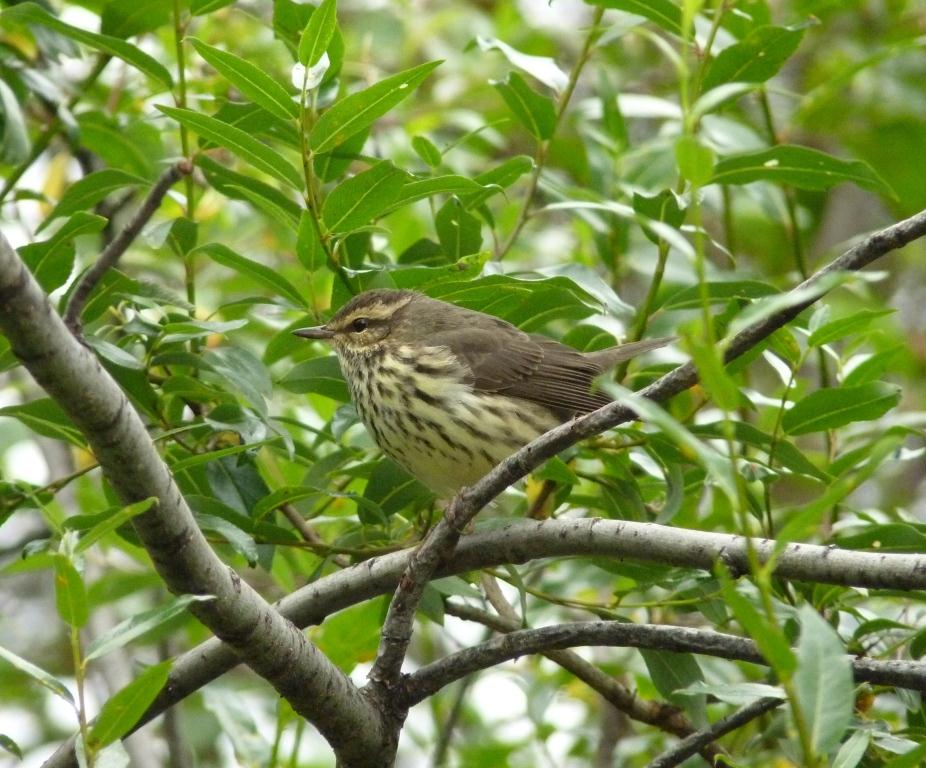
Northern Waterthrush, Kwethluk River, Yukon Delta National Wildlife Refuge
Photo Credit: Kristine Sowl
USFWS, Yukon Delta National Wildlife Refuge